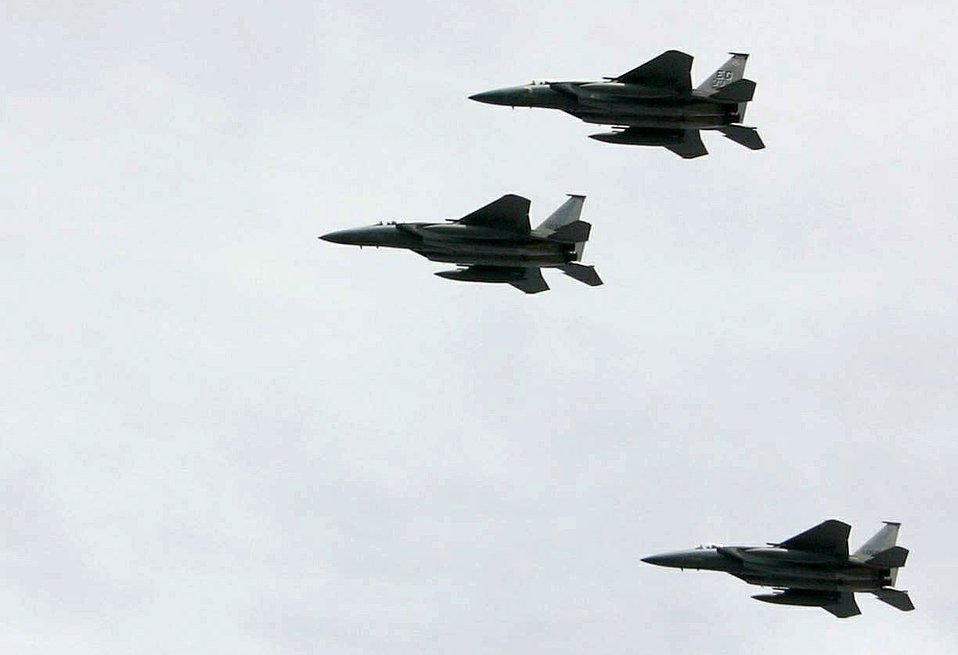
Airmen honor America's fallen

F-15 Eagles from the 33rd Fighter Wing from Eglin Air Force Base, Fla., fly in the missing man formation Sept. 20 over the National Tribute to Honor America's Fallen and Their Families in Washington, D.C.